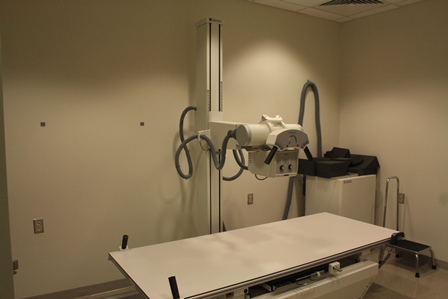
Kilmichael Photo 3

The x-ray room at the new healthcare clinic of Kilmichael Hospital’s in Kilmichael, MS is ready for patients on Sept. 27, 2012. Kilmichael Hospital received funding through the U.S. Department of Agriculture’s (USDA) Rural Development (RD) Community Facilities Program.